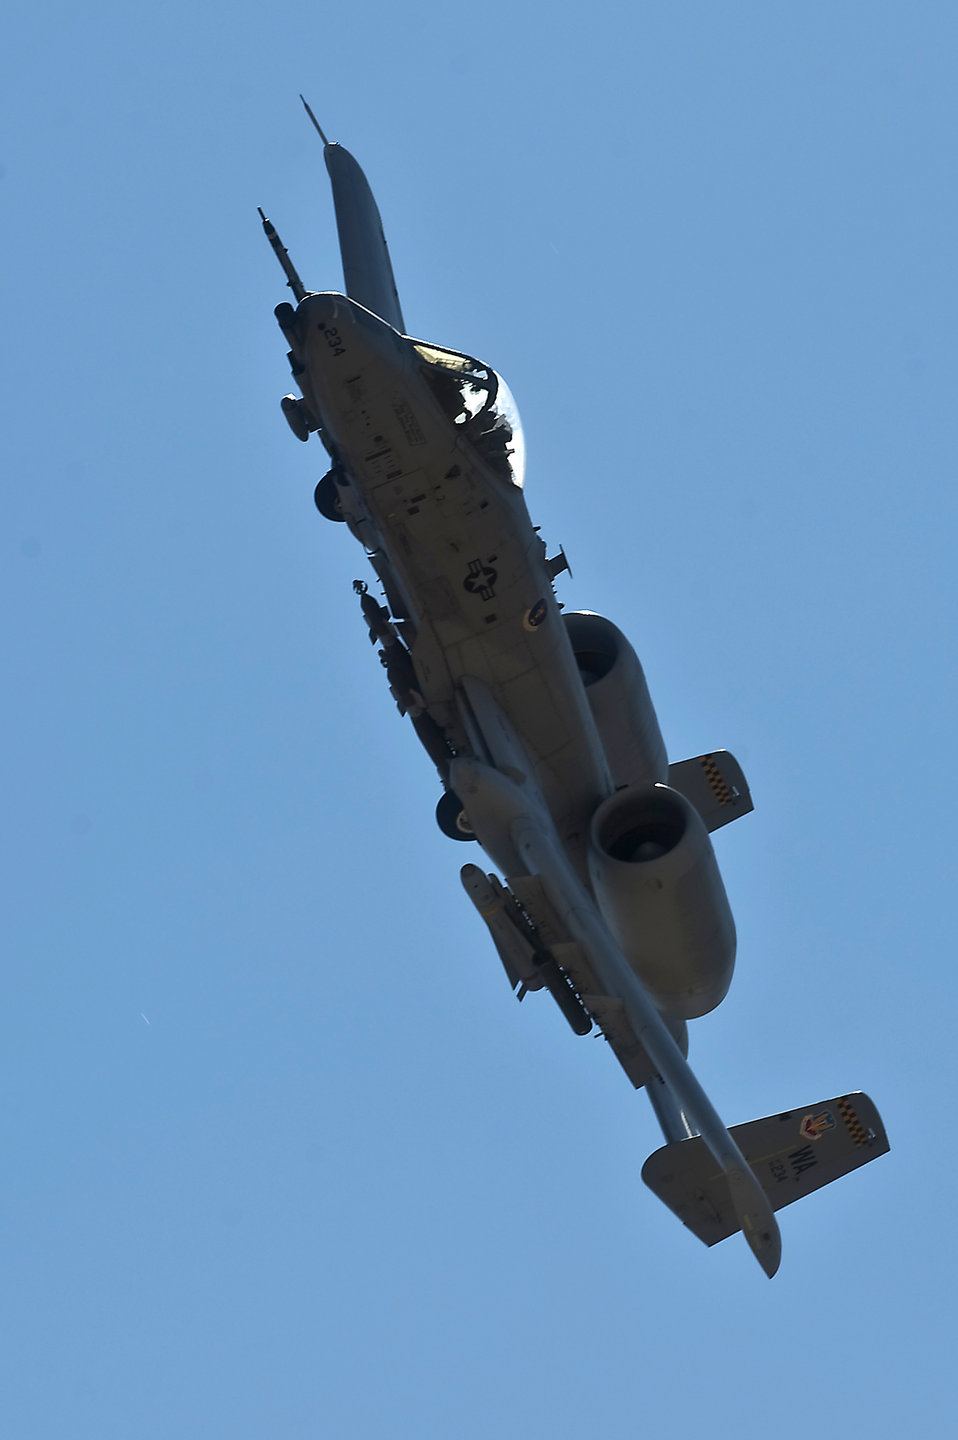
Air power

An A-10 Thunderbolt II from the U.S. Air Force Weapons School at Nellis Air Force Base, Nev., provides close-air support during a training mission Sept. 23, 2011, over the Nevada Test and Training Range. U.S. Air Force Weapons School students participate in many combat training missions over the NTTR during the six-month, graduate-level instructor course.